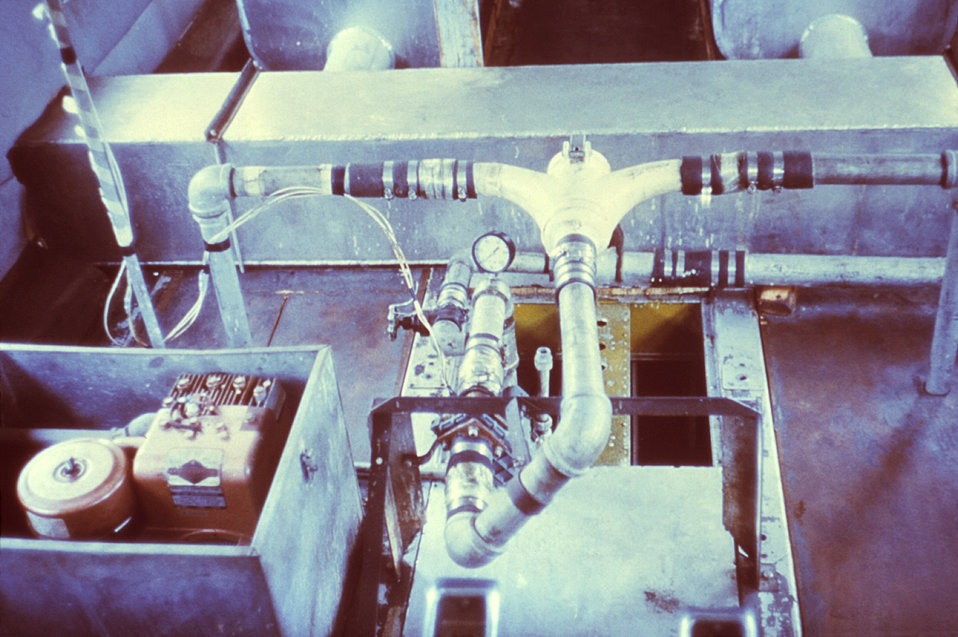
This 1978 photograph depicts the interior of a Lockheed C-121D 'Super Constellation's' fuselage containing the pump mechanism that will deliver the insecticidal fluid to the fog generator that will release an ultra-low volume (ULV) insecticidal fog.